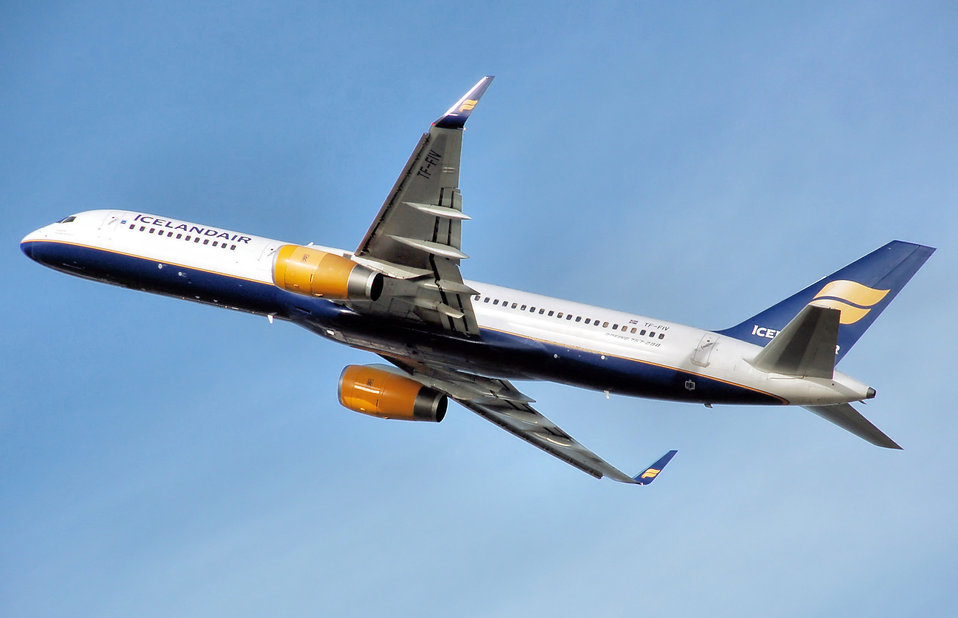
Icelandair Boeing 757-200 (TF-FIV) takes off from London Heathrow Airport, England. Photographed by Adrian Pingstone in January 2007 and released to the public domain.